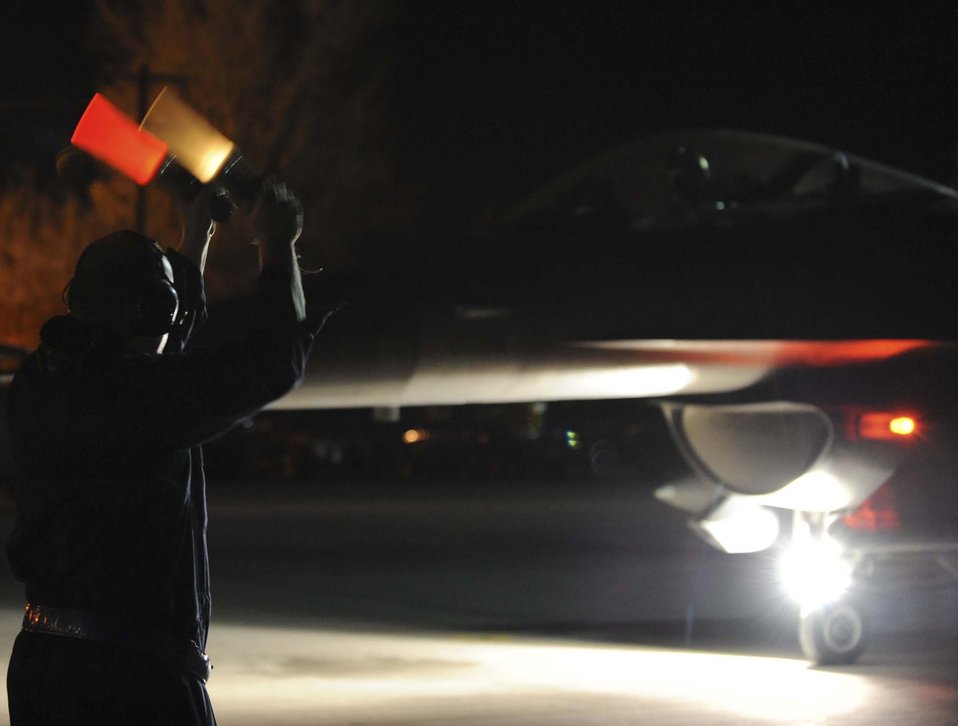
Nighttime operations

Airman 1st Class Patrick Densford marshals Capt. Mike Willhide in an F-16 Fighting Falcon for a night flying operation during Red Flag 09-3 Feb. 26 at Nellis Air Force Base, Nev. Red Flag is a multinational exercise providing a realistic environment to practice combat scenarios. Airman Densford is a 52nd Aircraft Maintenance Squadron F-16 crew chief deployed from Spangdahlem Air Base, Germany. Captain Willhide is a 157th Fighter Squadron F-16 pilot deployed from McEntire Joint National Guard Base, S.C.